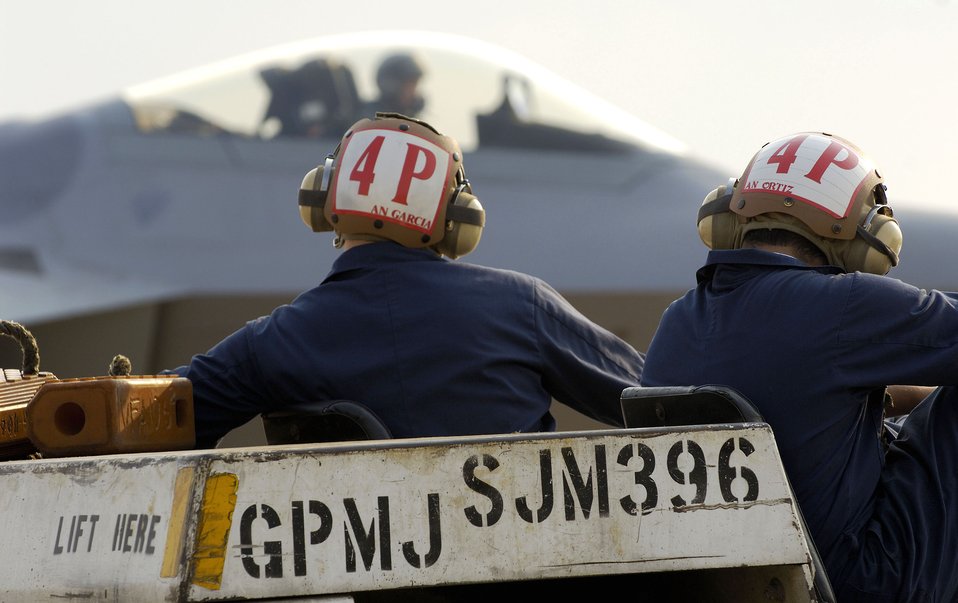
Raptors await return of roost

Navy F-18 Super Hornet crew chiefs assigned to Master Naval Air Base Oceana, Va., watch the arrival of F-22 Raptors from Elmendorf Air Force Base, Alaska, on Friday, June 30. The Raptors are assigned to the 27th Fighter Squadron at Langley AFB, Va. The 27th, 71st and 94th FS are flying sorties from other installations because of runway repairs at their home station.